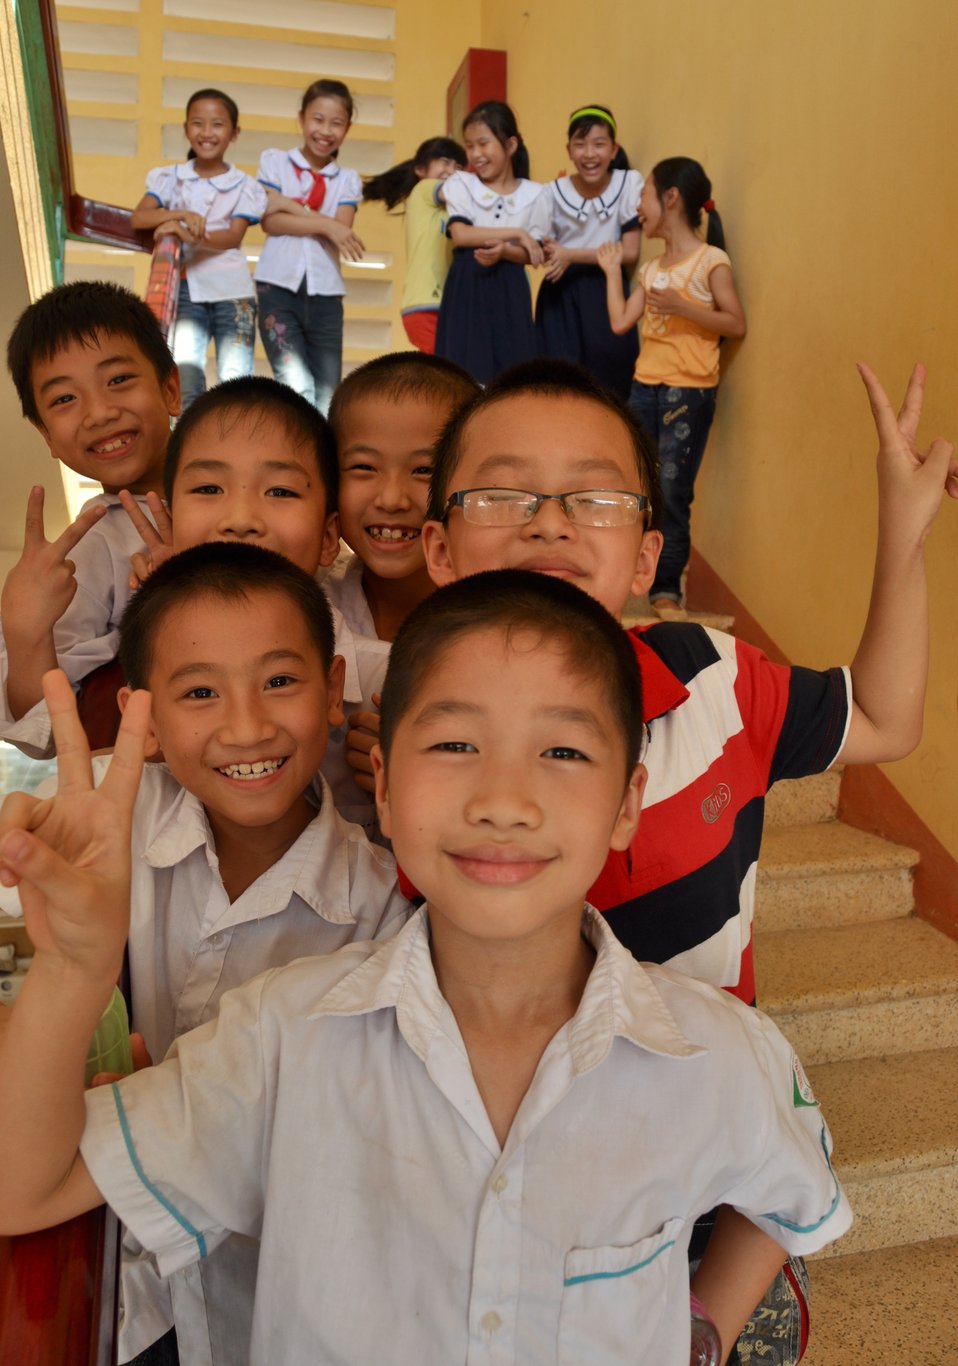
USAID supports deworming education and medication distribution in Bac Giang Province

May 20, 2013